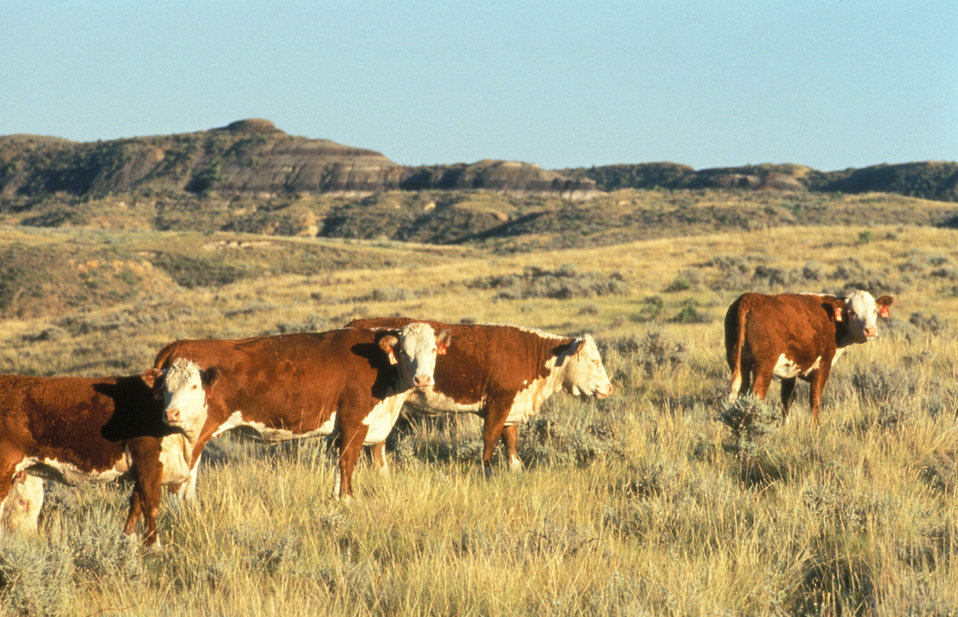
Hereford cattle graze on the U. S. Department of Agriculture’s (USDA) Agricultural Research Service (ARS) Fort Keogh Livestock and Range Research Laboratory near Miles City, MT on Mar. 1, 2010.